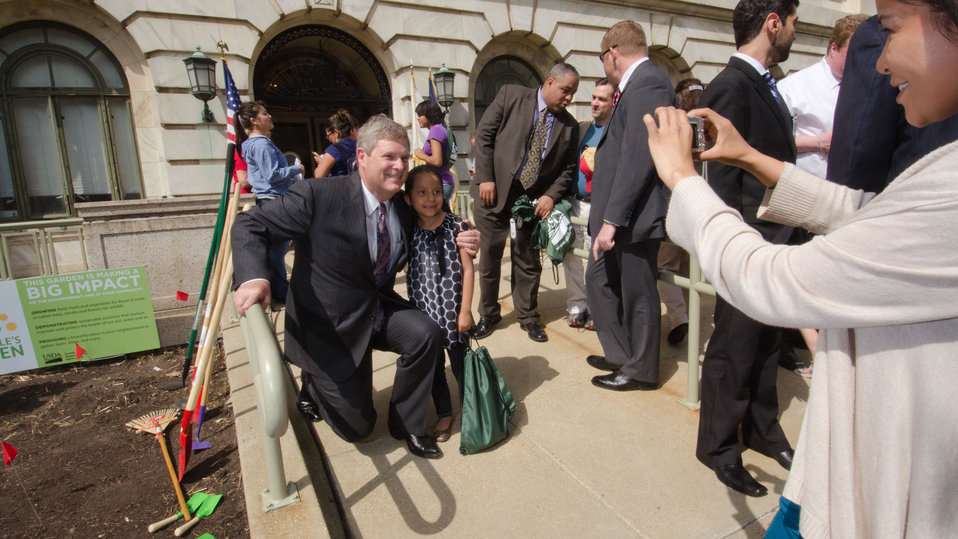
Agriculture Secretary Tom Vilsack met with Native American Youth at the U. S. Department of Agriculture in Washington, DC, on Wednesday, April 2, 2011 to encourage them to pursue a healthy lifestyle. After opening remarks and questions, Secretary Vilsack spent time with the 30 Students from Eastern and Western Tribes, Southeast Alaska, and Tuba City, Arizona, at he garden called The Roots of American Agriculture, and is part of the Headquarters’ People’s Garden.